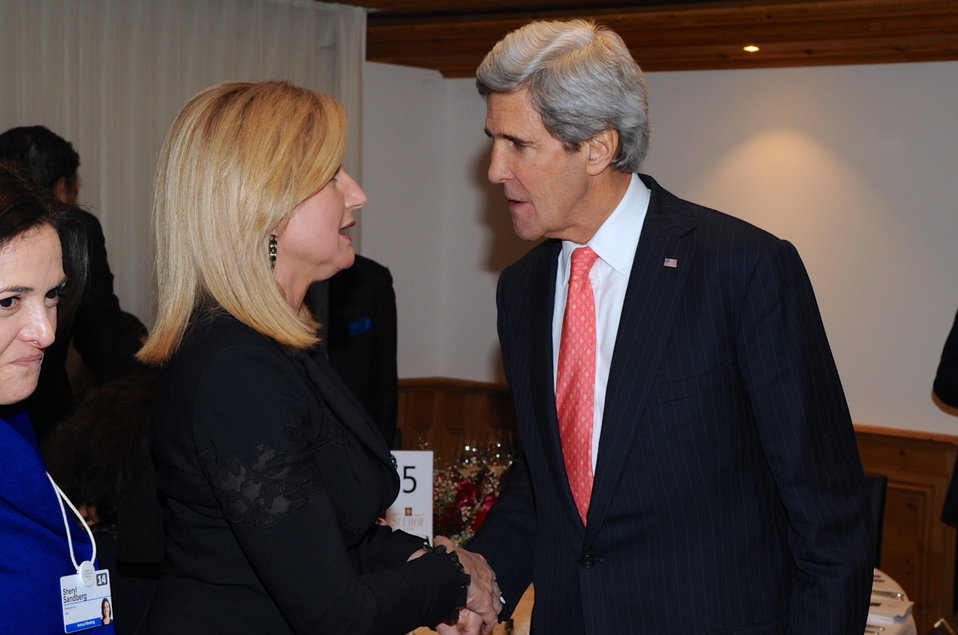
Secretary Kerry Speaks With Arianna Huffington in Davos

U.S. Secretary of State John Kerry speaks with Huffington Post founder Arianna Huffington during a dinner hosted by Coca-Cola CEO Muhtar Kent on the sidelines of the World Economic Forum in Davos, Switzerland, on January 23, 2014.